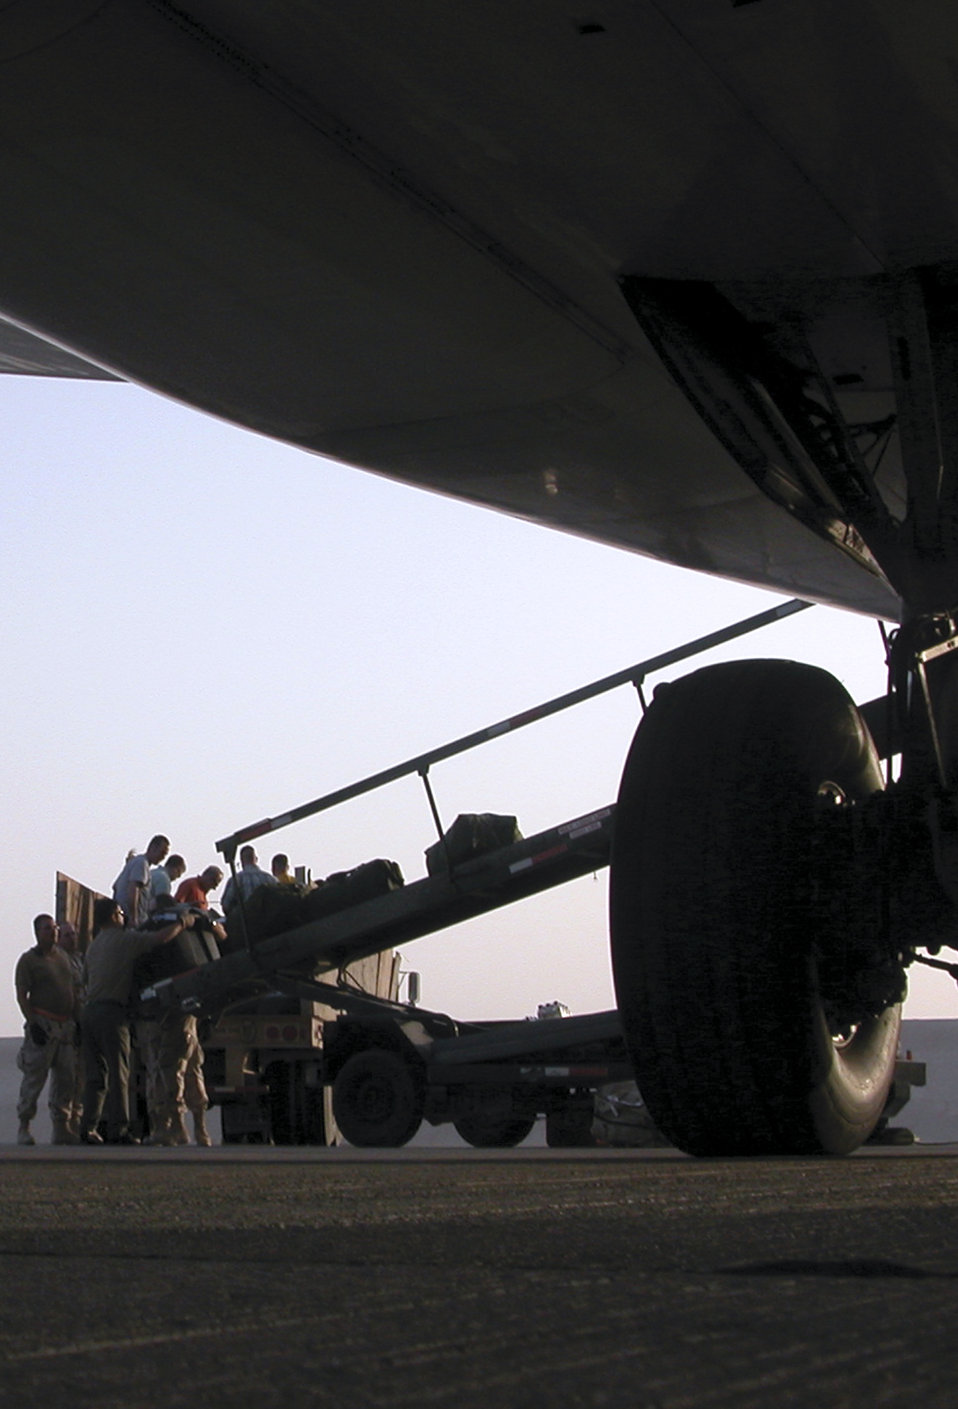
Base agencies keep rotations moving in right direction

SOUTHWEST ASIA -- Passengers and 8th Expeditionary Air Mobility Squadron Airmen unload luggage from a rotator flight at a forward-deployed location. Airmen from the 8th EAMS, along with the 379th Expeditionary Logistics Readiness Squadron's reception control center and the 379th Expeditionary Mission Support Group's personnel support for contingency operations office, are responsible for processing servicemembers in and out of U.S. Central Command's area of responsibility.